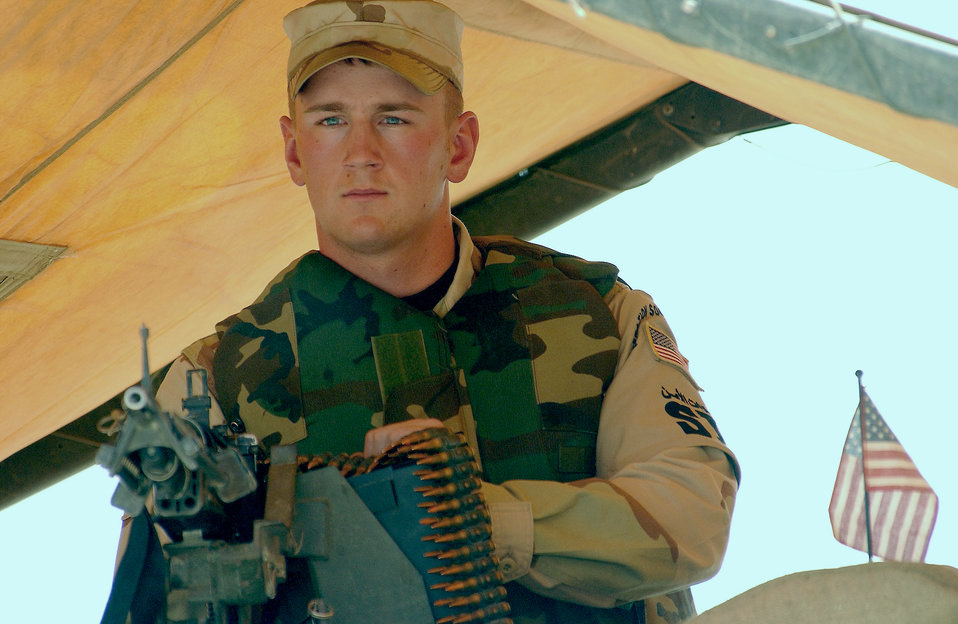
Controlled entry

OPERATION IRAQI FREEDOM -- Senior Airman Bryce Weight, a security forces journeyman deployed from the Salt Lake City, Utah, Air National Guard to the 363rd Expeditionary Security Forces Squadron, guards an entry control point with a M-60 machine gun on April 3, 2003. The 363rd ESFS members work around the clock performing force protection measures, air base defense, and protecting personnel in support of Operation Iraqi Freedom at a forward deployed location in southwest Asia. Operation Iraqi Freedom is the multi-national coalition effort to liberate the Iraqi people, eliminate Iraq's weapons of mass destruction, and end the regime of Saddam Hussein.